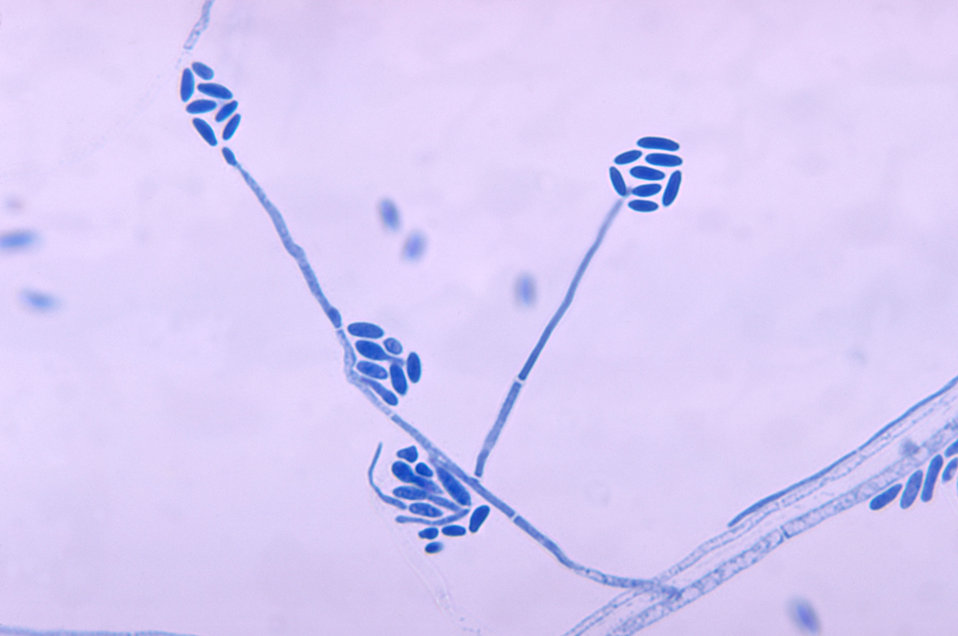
This photomicrograph shows conidia and conidiophores of the fungus Acremonium falciforme.